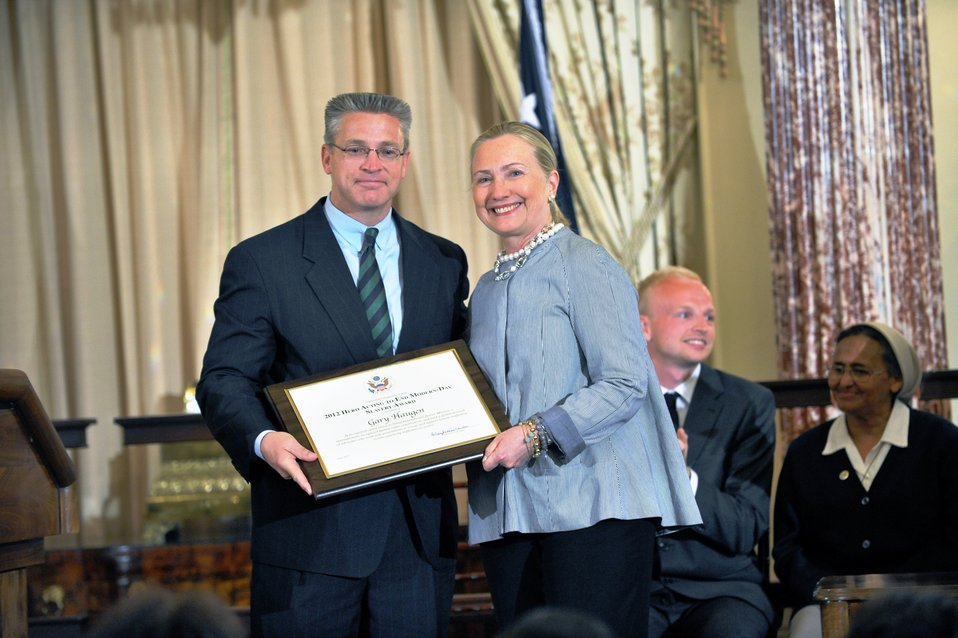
Secretary Clinton With TIP Hero Gary Haugen

U.S. Secretary of State Hillary Rodham Clinton honors Gary Haugen of the United States, a 2012 Trafficking in Persons (TIP) Report Hero, at the U.S. Department of State in Washington, D.C., on June 19, 2012.